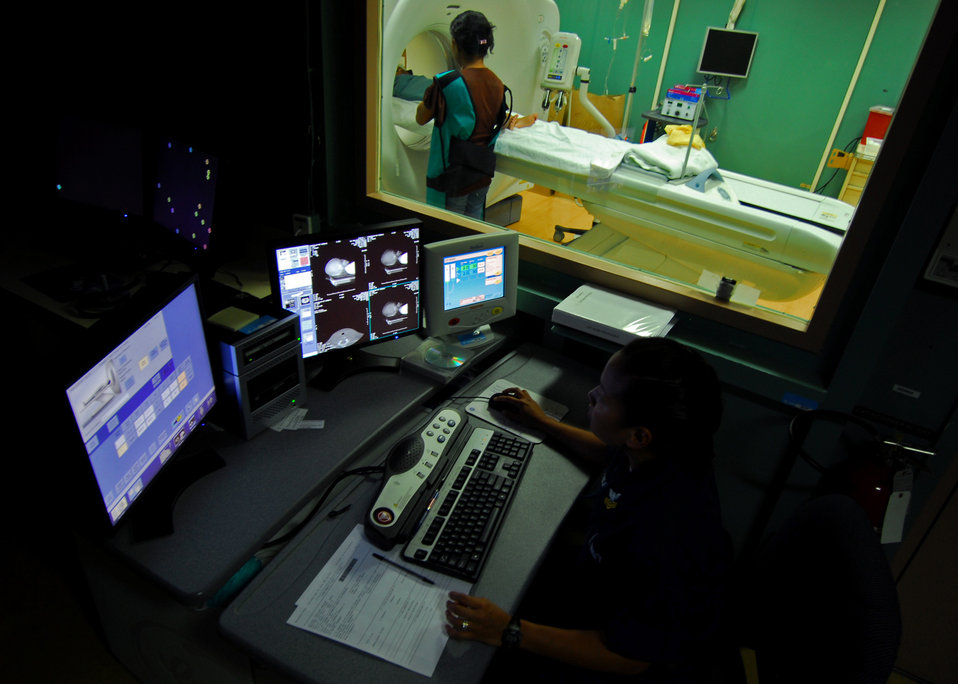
Hospital Corpsman 1st Class Haschke Reviews a Patient's 'CAT' scan

Hospital Corpsman 1st Class Eiyeen Haschke reviews a patient’s “cat” scan aboard the Military Sealift Command hospital ship USNS Mercy (T-AH 19) in support of Pacific Partnership 2010 on July 30, 2010. Mercy is in Ambon, Indonesia, participating in Sail Banda 2010. Mercy’s participation features medical and dental care clinics and construction projects in and around Ambon, as well as on Seram Island.